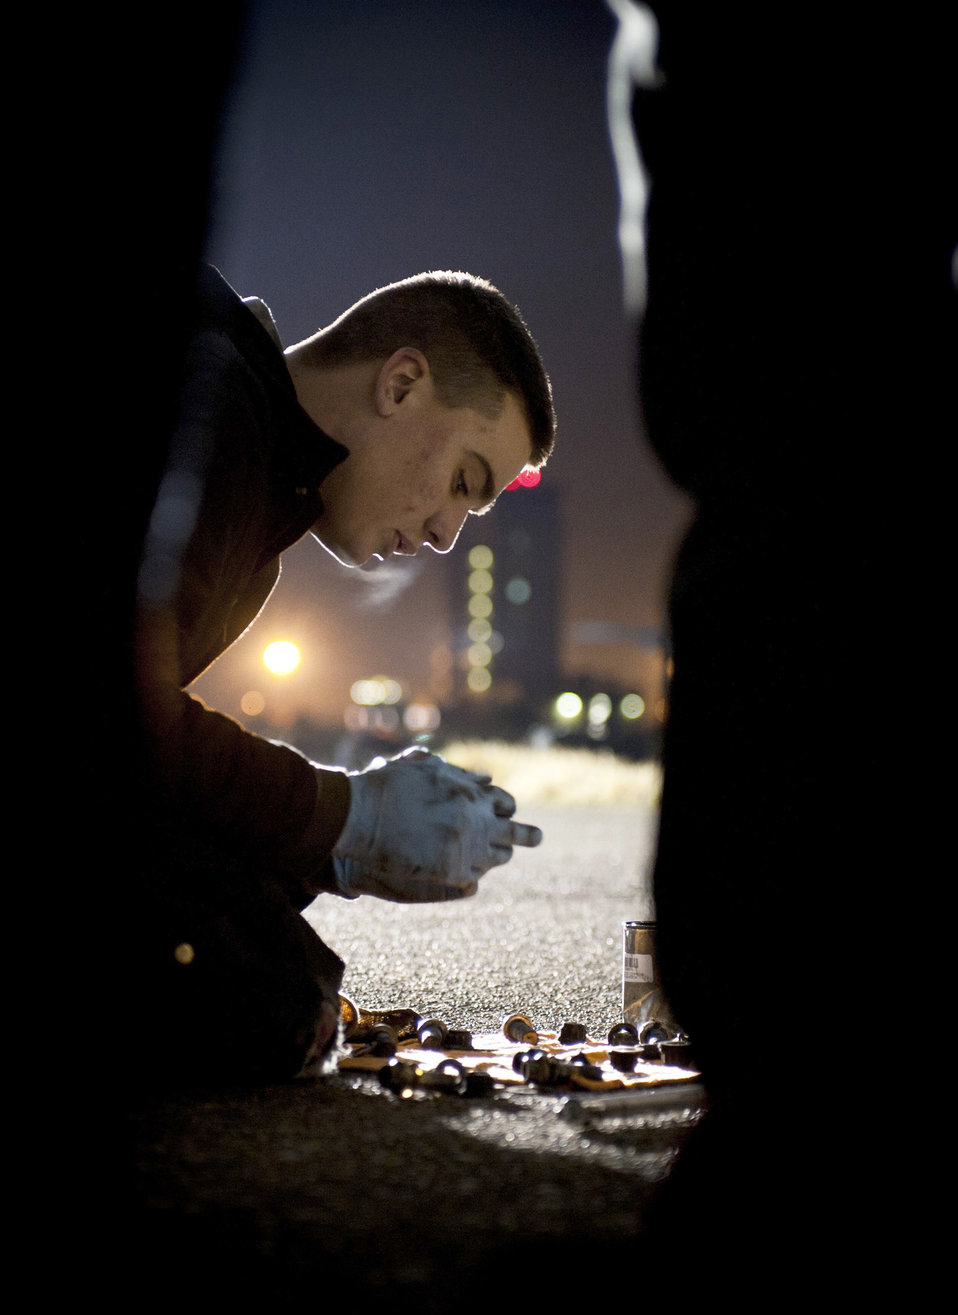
C-130 maintenance

Airman 1st Class Stephen Tessier applies grease to bolts for a C-130 Hercules March 31, 2011, at Yokota, Japan. Tessier is a crew chief assigned to the 374th Maintenance Squadron.